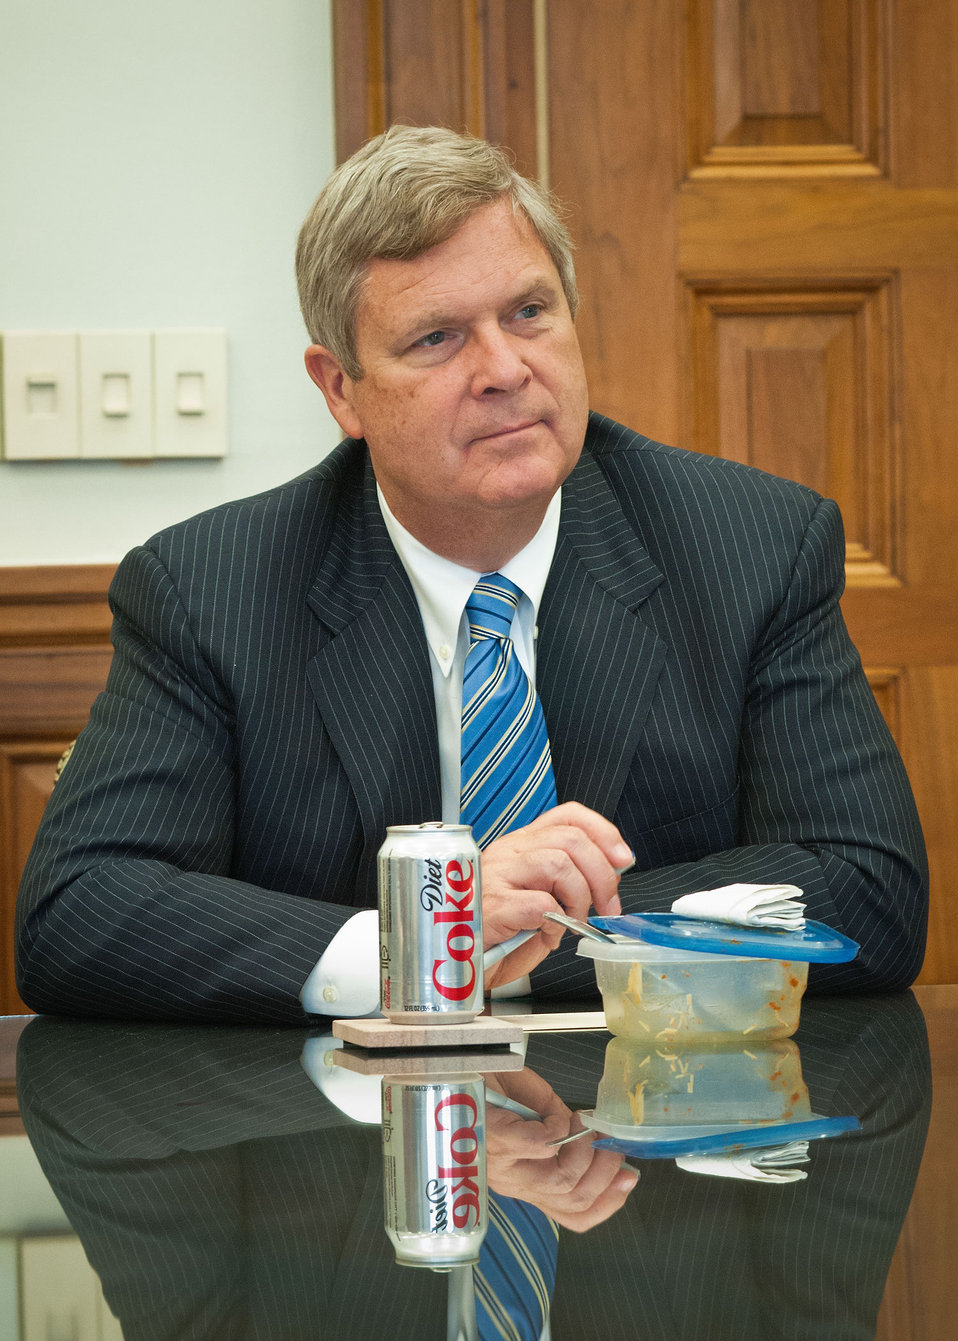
Agriculture Secretary Tom Vilsack has lunch with U.S. Department of Agriculture (USDA) employees to discuss the roles they play within the Department at a Brown Bag Lunch event in Washington, D.C. on Wednesday, Sept. 26, 2012. Secretary Vilsack holds the occasional Brown Bag Lunches to gain information and knowledge to assist in the administration of the affairs and programs of the Department, and to thank the employees for their diligent work to the Department and as public servants.